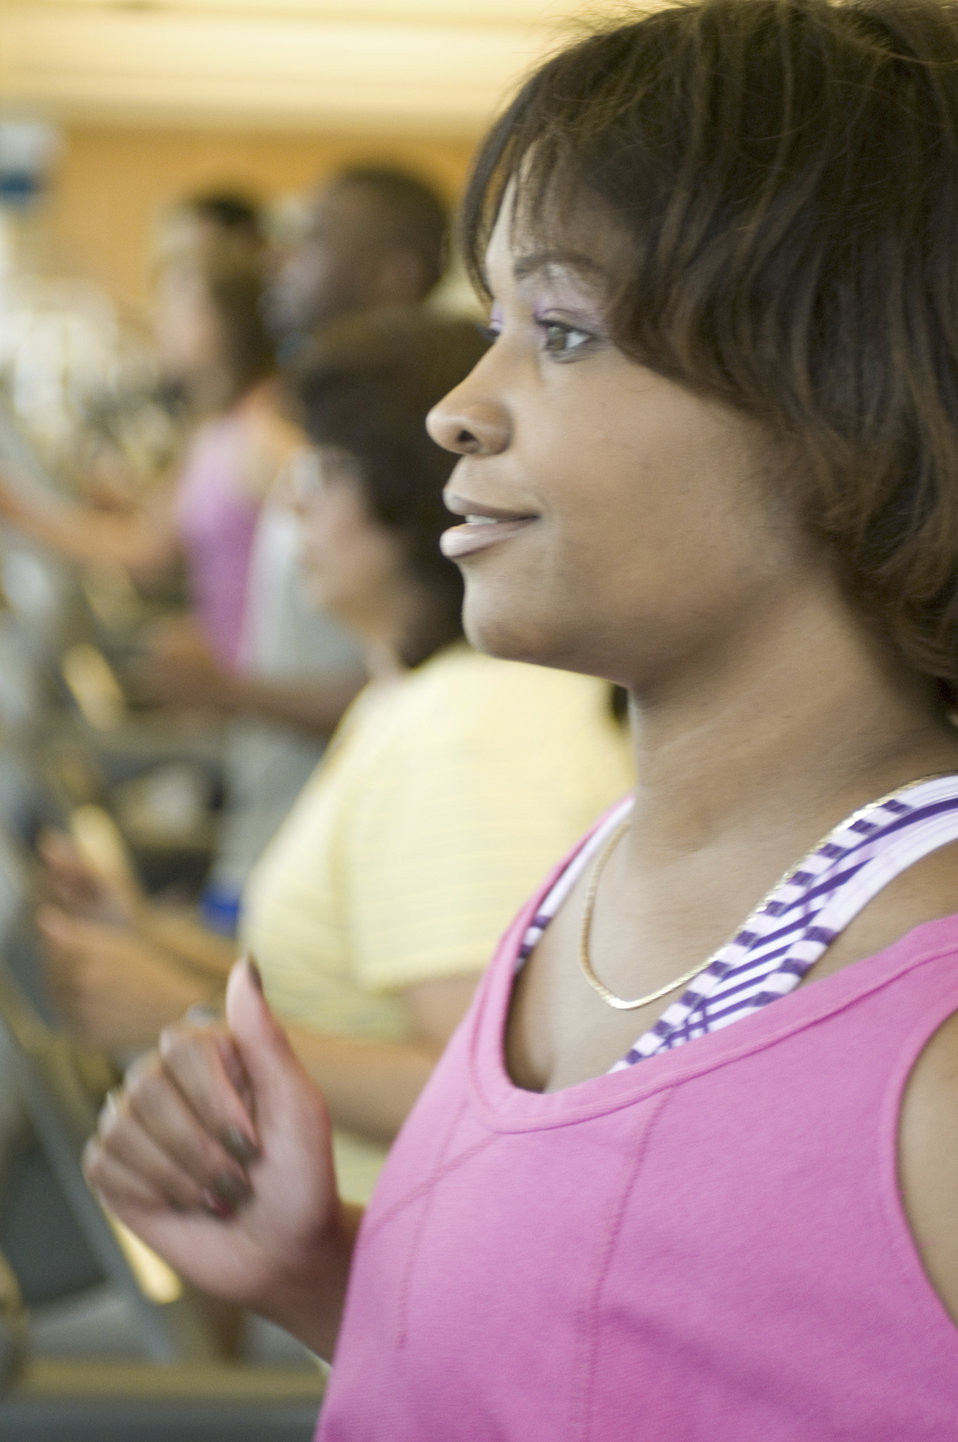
This image was captured on one of the Centers for Disease Control's (CDC) campuses, in the facility's fitness center, where a number of scheduled group classes are provided for employees' health and enjoyment. In this particular view, a female CDC staffer was making use of a treadmill, taking part in some aerobic exercise.